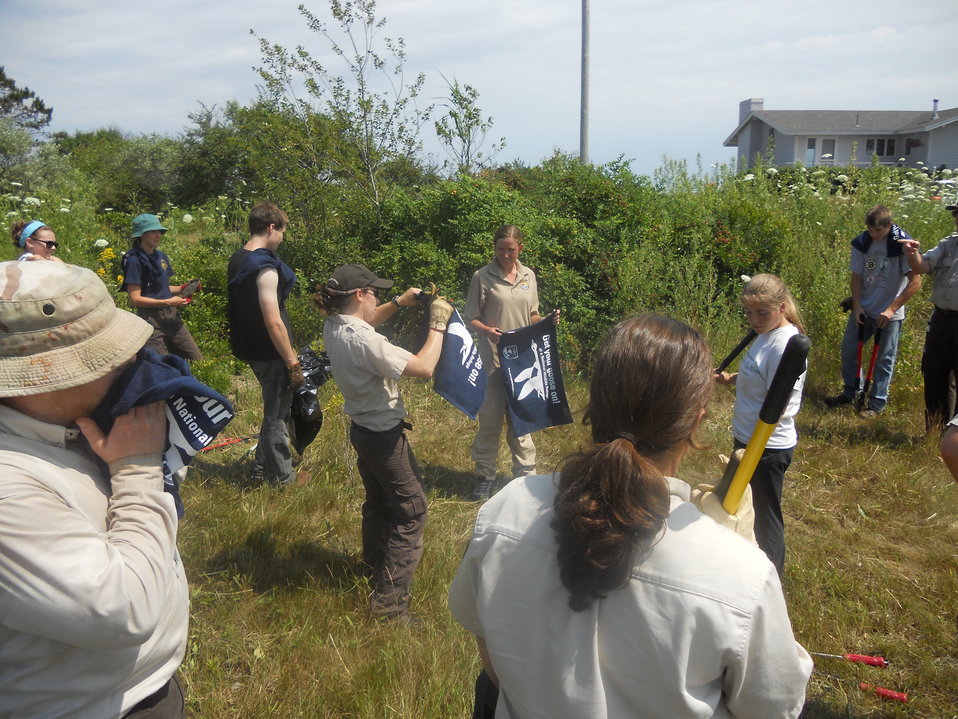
Get Your Goose On!

RCNWR embarks on its second cutting of the invasive plant phragmites, also known as common reed. We use mechanical removal instead of herbicides in honor of Rachel Carson's legacy. This is an experimental plot, where we cut the phrag multiple times during the summer and measure its growth relative to a control plot down the road.